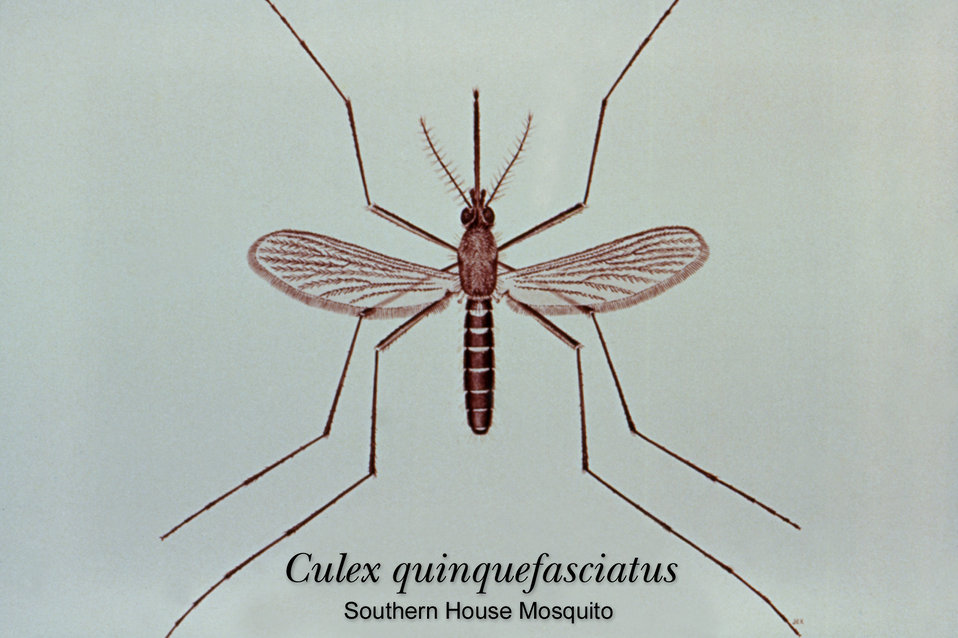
This illustration depicts a typical adult Culex quinquefasciatus mosquito.